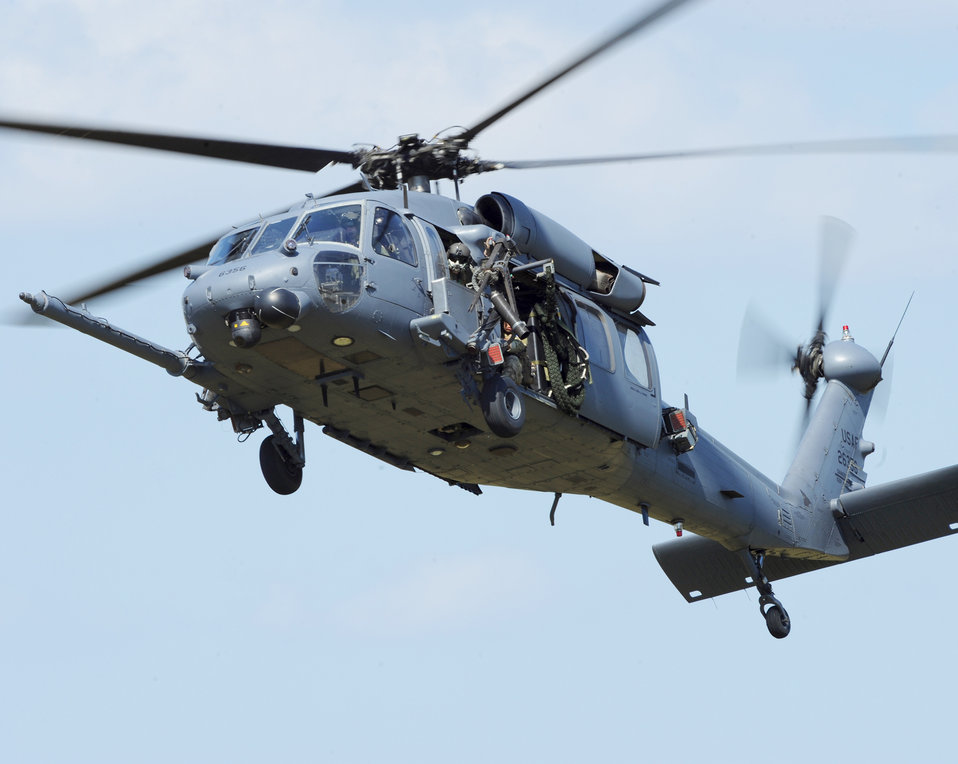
Show time!

An HH-60G Pave Hawk helicopter from the 41st Rescue Squadron prepares to land at Moody Air Force Base, Ga., Oct. 14, 2010. The Pave Hawk landed and dropped off pararescuemen during a combat demonstration at the base's Grand Bay Bombing and Gunnery range.